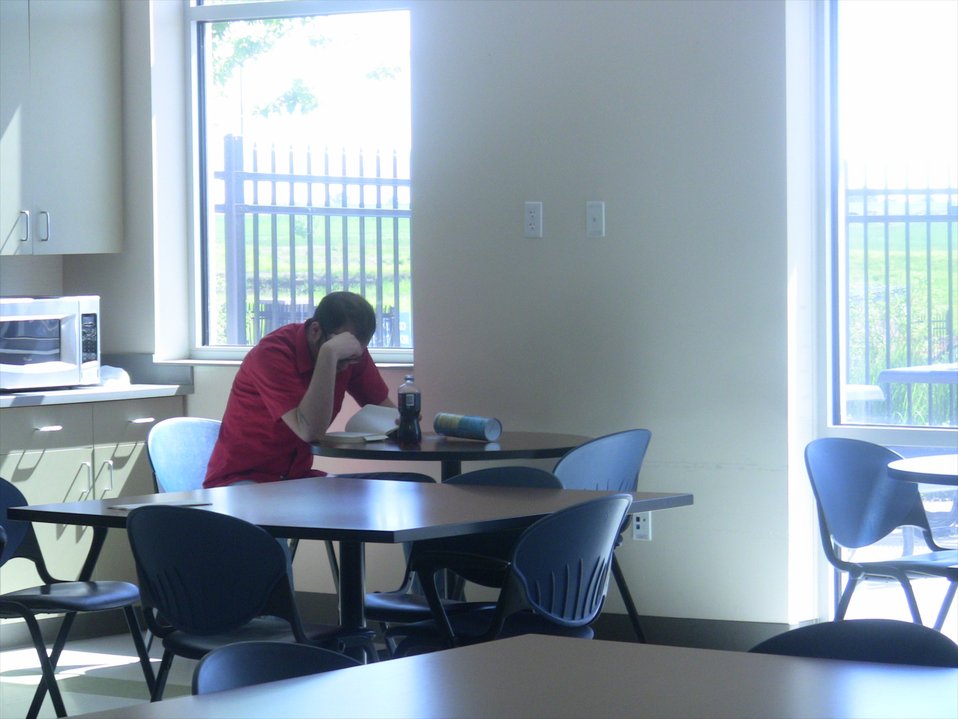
Cody White taking his morning break; Location: National Archives at Denver, Broomfield, CO